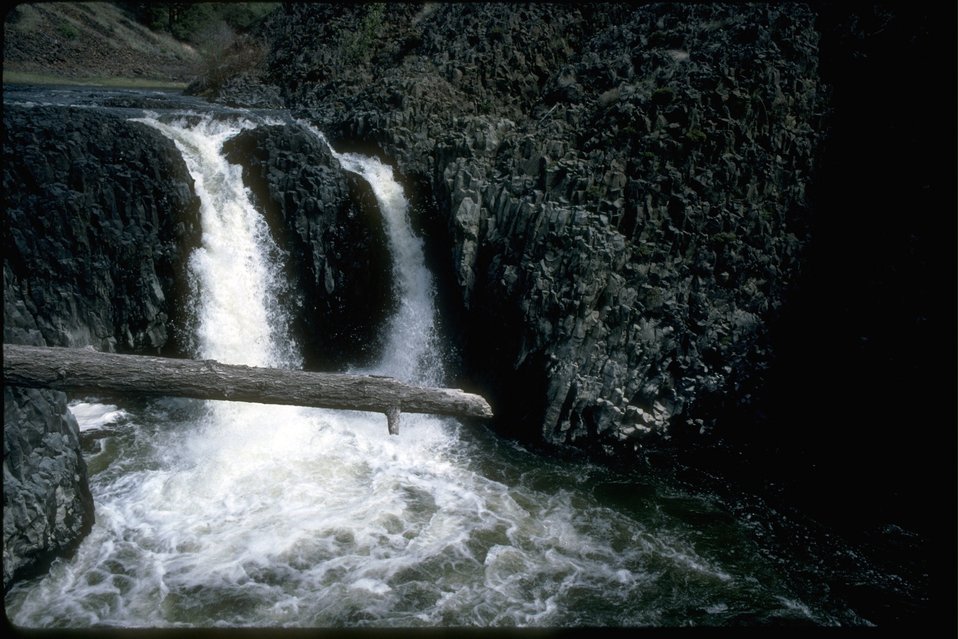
The Lower Falls on the North Fork of the Crooked River. OR 5-31